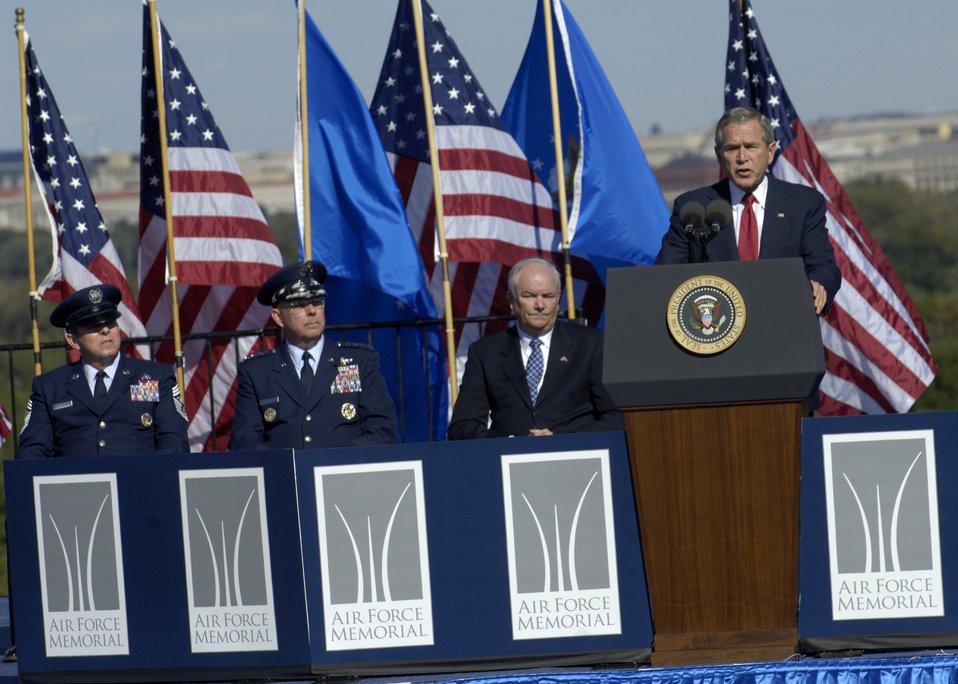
President accepts Air Force Memorial

On behalf of all American citizens President George W. Bush accepts the Air Force Memorial during a dedication ceremony at its Arlington, Va. location overlooking the Pentagon on Saturday, Oct. 14, 2006. Looking on are, from left: Chief Master Sgt. of the Air Force Rodney J. McKinley, Air Force Chief of Staff Gen. T. Michael Moseley and Secretary of the Air Force Michael W. Wynne. Designed by the late James Ingo Freed the memorial with its three soaring spires inspired by the U.S. Air Force Thunderbirds bomb burst manuever, pays tribute to and honors the patriotic men and women of the U.S. Air Force and its predeccessor organizations. An open house will run near the Pentagon in conjunction with the dedication ceremony which will feature performances by the U.S. Air Force Band, the U.S. Air Force Honor Guard drill team, and will culminate with a concert featuring country music performer LeeAnn Womack.